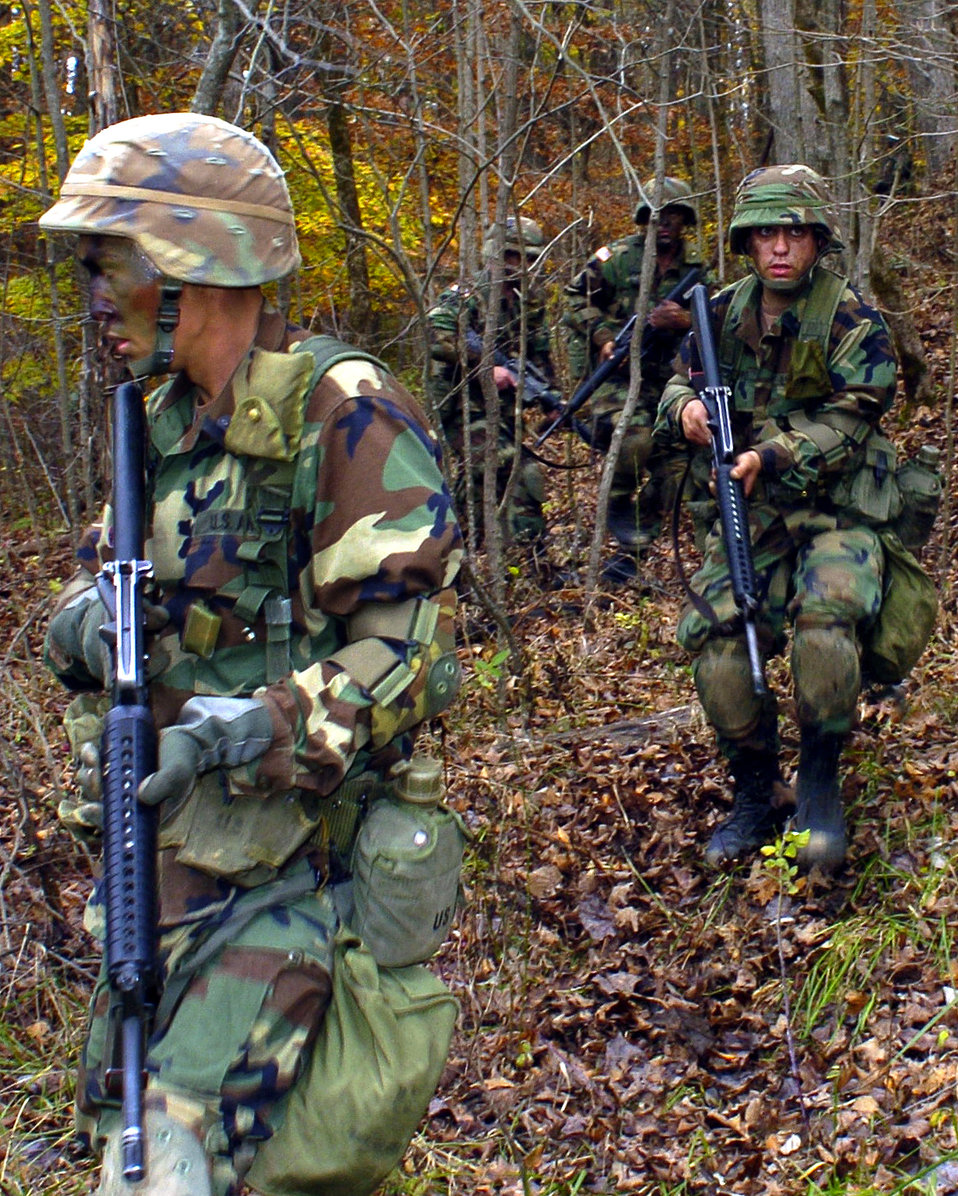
Operation Blue to Green

FORT KNOX, Ky. -- Former U.S. Air Force and Navy service members participate in field training during the Warrior Transition Course here recently. The WTC, also known as the Blue to Green program, is a four-week course that turns airmen and sailors into soldiers by teaching them Army rank structure, customs and courtesies, and combat skills. Under this program the servicemembers can maintain their former job specialties and rank.